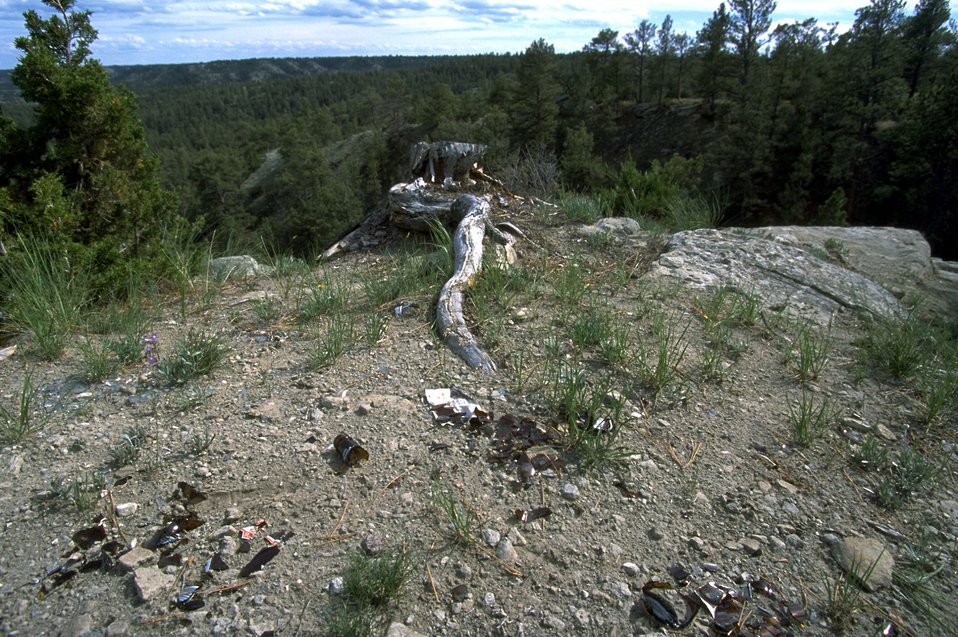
Evidently an area used for target practice in the Acton Recreation Area - a tree killed by gunfire and broken glass from shooting glass targets